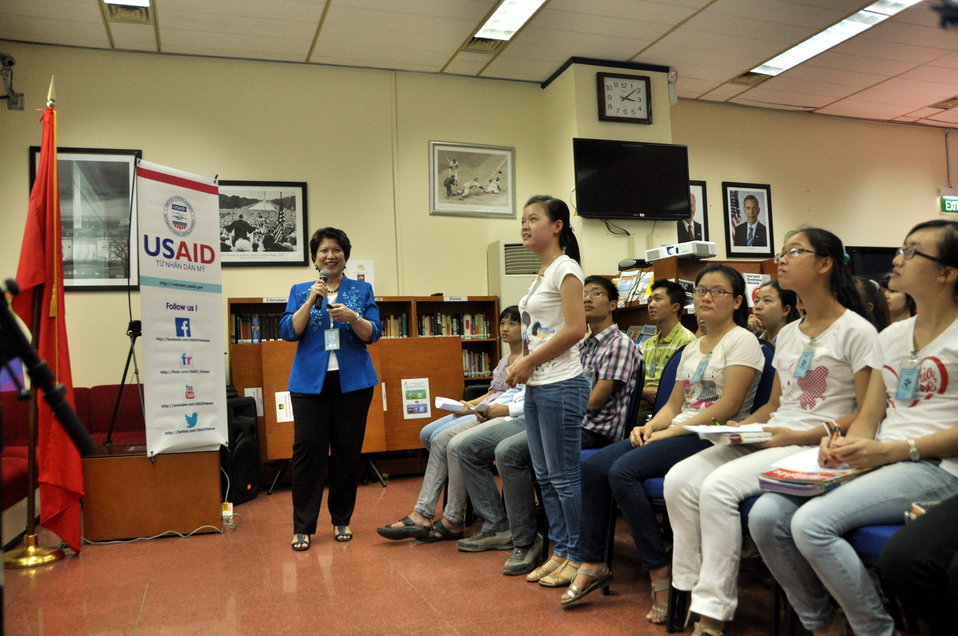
Climate Change Talk at the American Center

Hanoi, May 28, 2013.